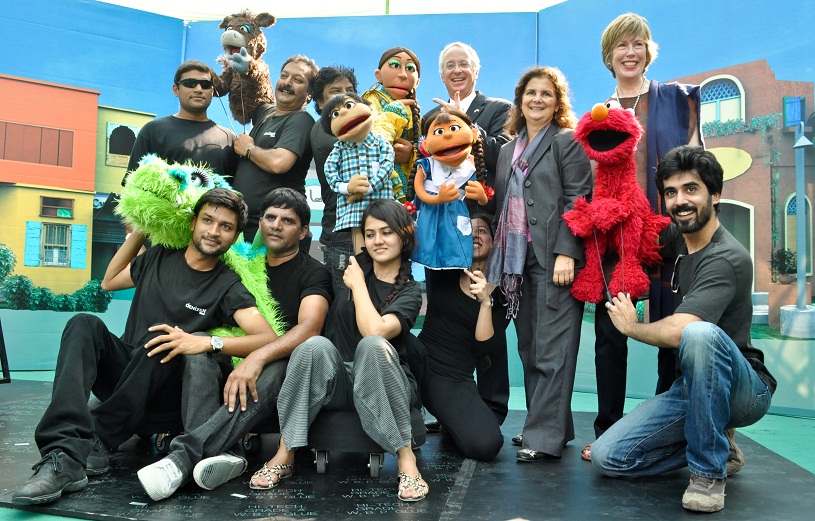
Pakistan Children Television (PCTV)

Lahore, October 5, 2011: Group photo of U.S. Ambassador Cameron Munter and his wife Dr. Marilyn Wyatt with puppeteers and PCTV team (a new USAID-sponsored Pakistani children’s TV show Sim Sim Hamara that will be launched later this year) at the Rafi Peer Theatre Workshop in Lahore.

Sim Sim Hamara is a new Pakistani puppet show that has been designed under the USAID-funded four-year, $20-million Pakistan Children Television (PCTV) Project (puppet-based television programming) for Pakistani children. The show is scheduled to go on air in late December. This take-off on Sesame Street will provide joyful learning opportunities for children in the 4-9 year age group, with a focus on disadvantaged children, especially girls who do not have access to formal schooling. Educational curriculum will focus on language development, critical thinking, and cognitive processes. The program is expected to help alleviate the educational deficits of children without access to schooling and reflect messages of inclusion, mutual respect, and equal opportunity while developing basic literacy and numeracy skills.

In addition to the television show, the USAID-funded project will include: radio programs for parents and other caregivers, live puppet shows, mobile video shows, a website with e-books, games, and children’s songs.